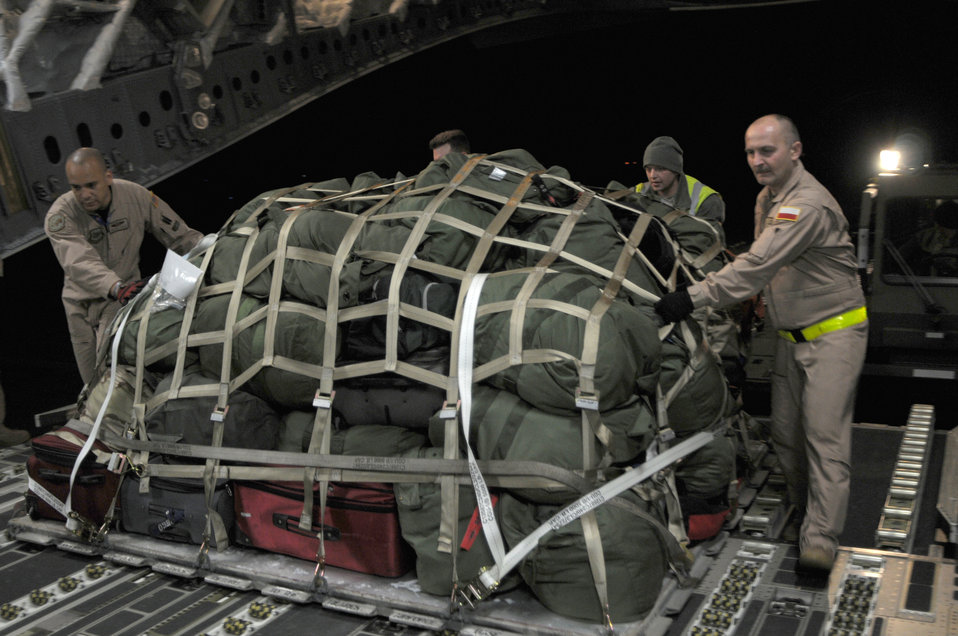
Operation Odyssey Dawn

Airmen from the 48th Fighter Wing and members of the Heavy Airlift Wing, Papa Air Base, Hungary, load equipment on a C-17 Globemaster III in support of Operation Odyssey Dawn on Royal Air Force Lakenheath, England, March 19, 2011. Members of the 48th Fighter Wing were recently notified that they would be supporting efforts in Operation Odyssey Dawn. The 48th FW provides all-weather, day or night air superiority and air-to-ground precision combat capability as well as combat search and rescue capabilities.